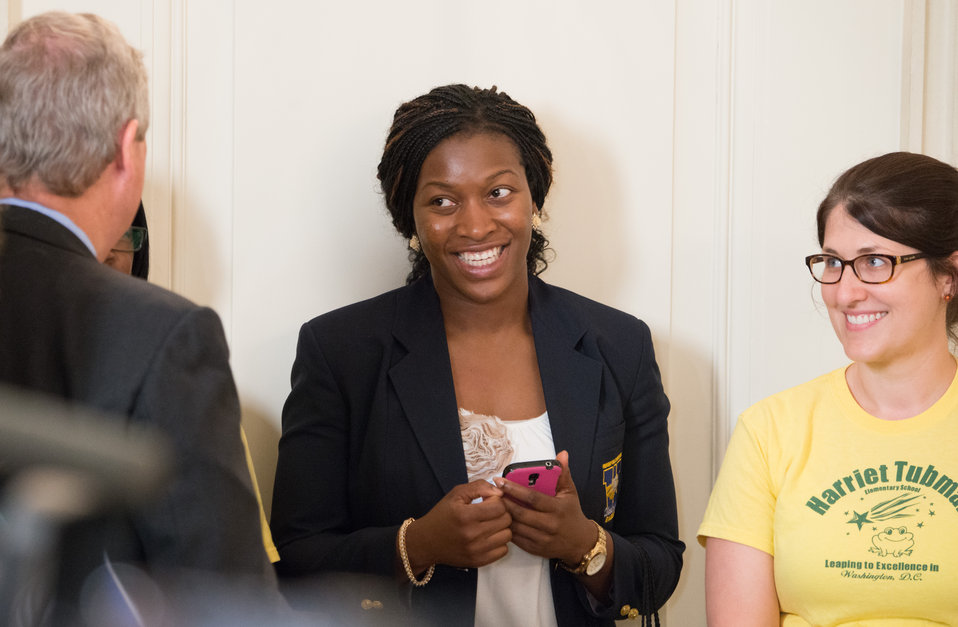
Agriculture Secretary Tom Vilsack speaks with Washington, D.C. staff persons from Cleveland Elementary School, Friendship Public Charter School, Kimball Elementary School, Bancroft Elementary School, Harriet Tubman Elementary School in the State Dining Room of the White House in Washington, D.C. on Thursday, Jun. 12, 2014. The schools, who helped plant the garden in the spring, made lunch from this year’s summer crop with the help of White House chefs and visiting school nutrition directors from Orlando, FL, Dallas, TX, and West Virginia USDA photo by Lance Cheung.